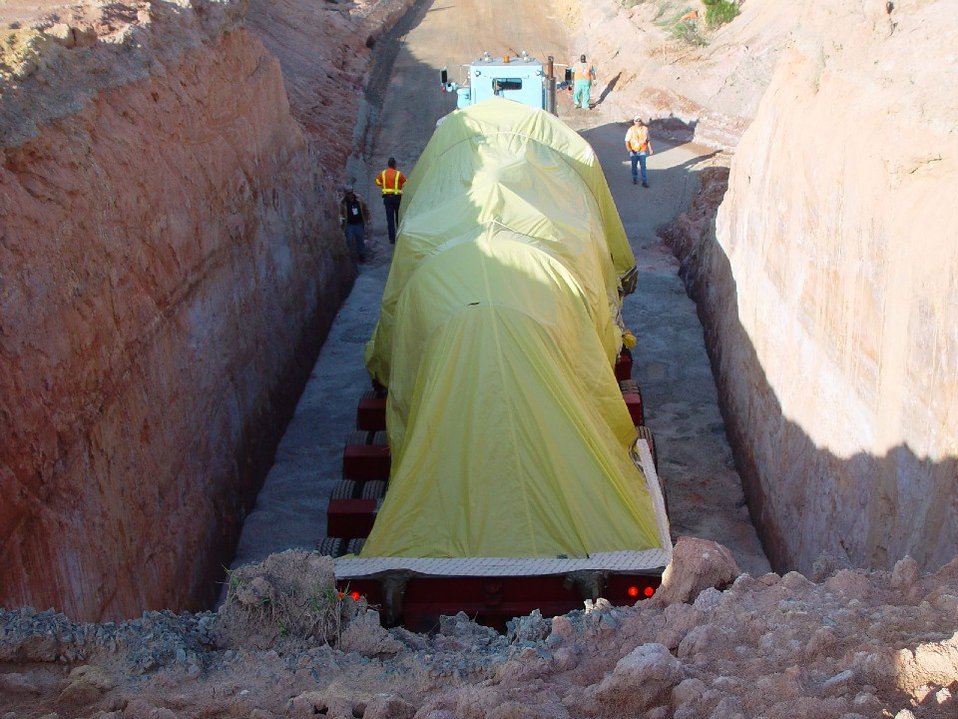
HWCTR PV Disposal, 4-14-11

Recovery Act workers removed the Heavy Water Components Test Reactor vessel, shown here, and permanently disposed it onsite.